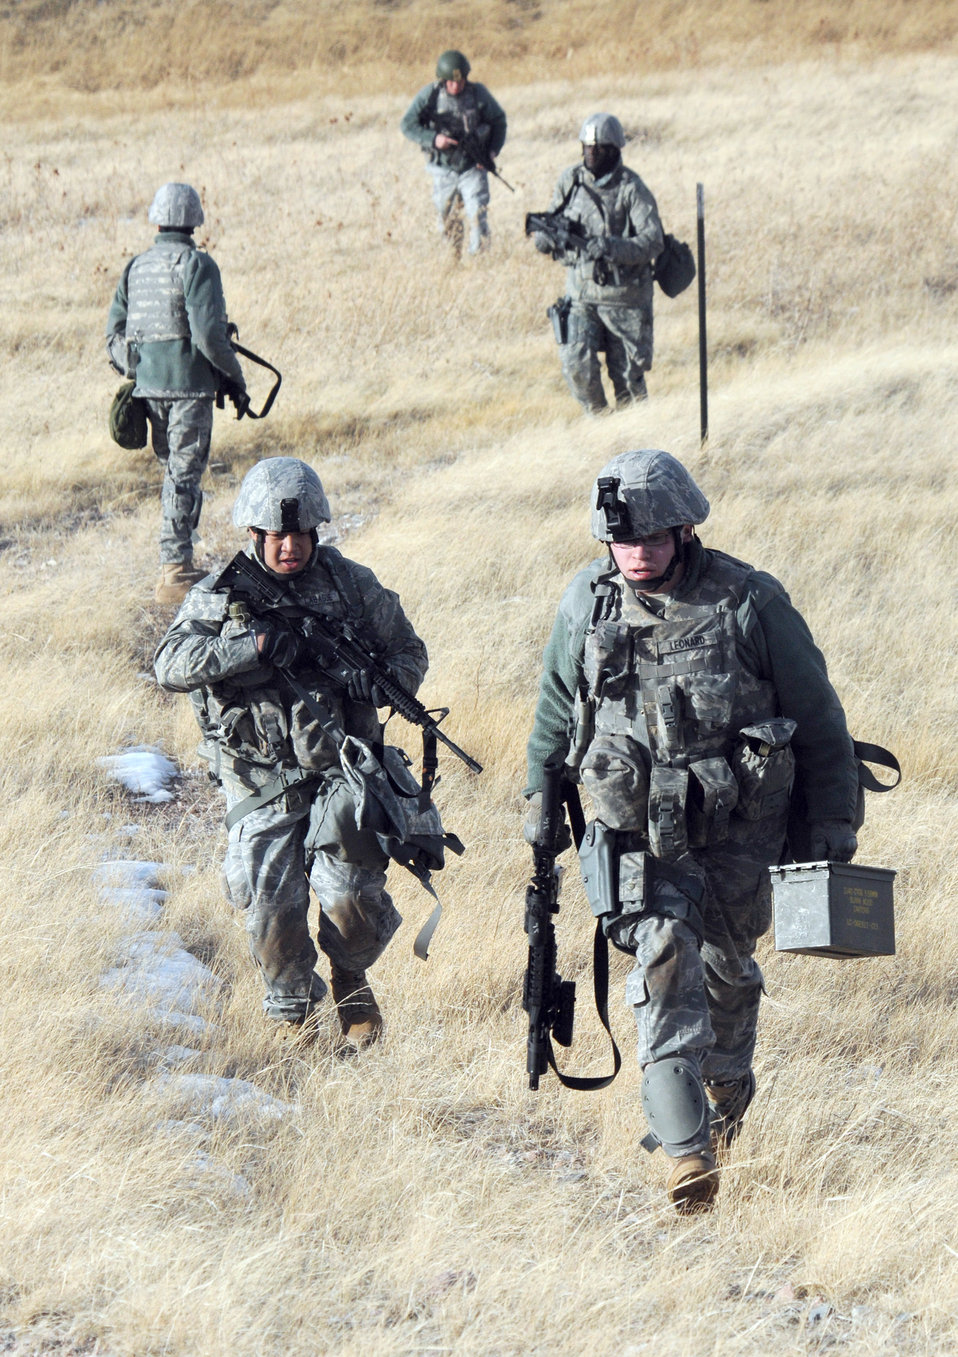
Security forces exercise

Airman 1st Class Lance Leonard, Senior Airman Christian Cabague and other members of the 90th Security Forces Group patrol through a field during an exercise Jan. 13, 2011, at F.E. Warren Air Force Base, Wyo. Airman Leonard is assigned to the 790th Missile Security Forces Squadron, and Airman Cabague is assigned to the 90th Security Forces Squadron.